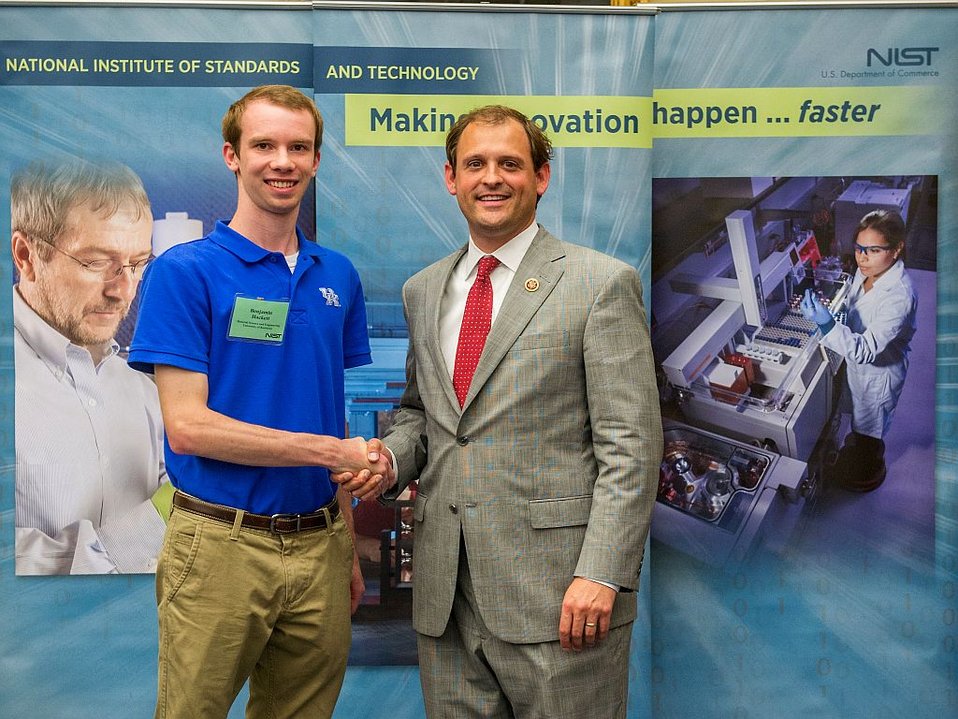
Congressman Barr and SURF Student

Kentucky Congressman Andy Barr, Dem. (right) congratulates NIST Student Undergraduate Research (SURF) Fellow and University of Kentucky undergraduate Ben Hackett (left) at the 2013 SURF on the Hill Day.